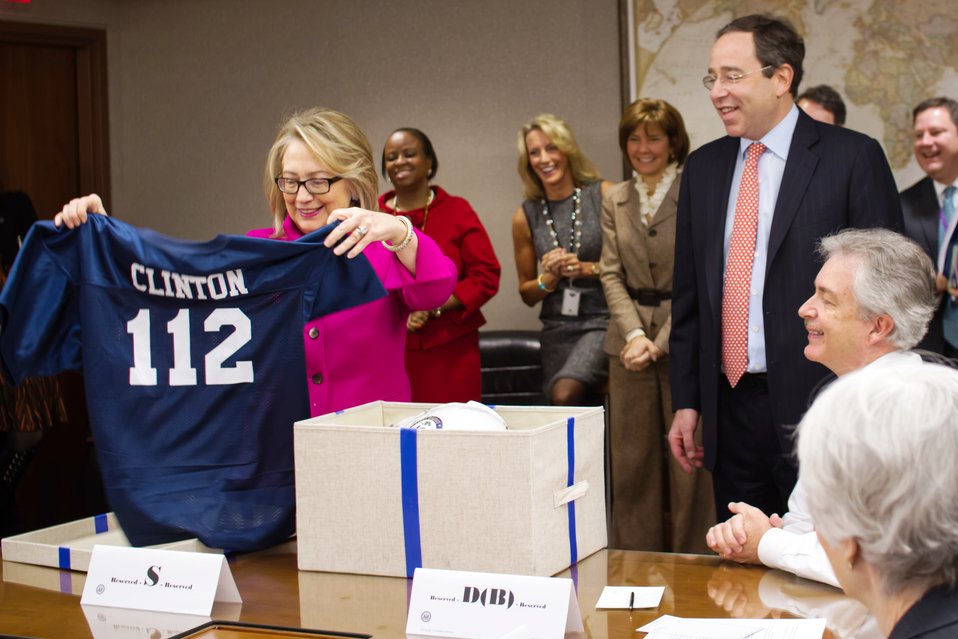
Secretary Clinton Is Presented a Football Jersey

U.S. Secretary of State Hillary Rodham Clinton is presented a football jersey by Deputy Secretary Thomas Nides upon her return to the office in Washington, D.C., January 7, 2013. The jersey number 112 represents the number of countries she has visited as Secretary of State.